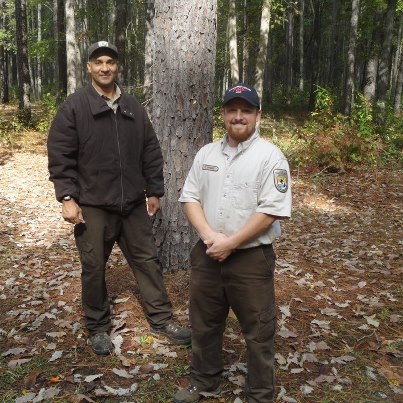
Help on the way! (NJ)

Two employees of Great Swamp National Wildlife Refuge are headed to Chincoteague to help clear roads!